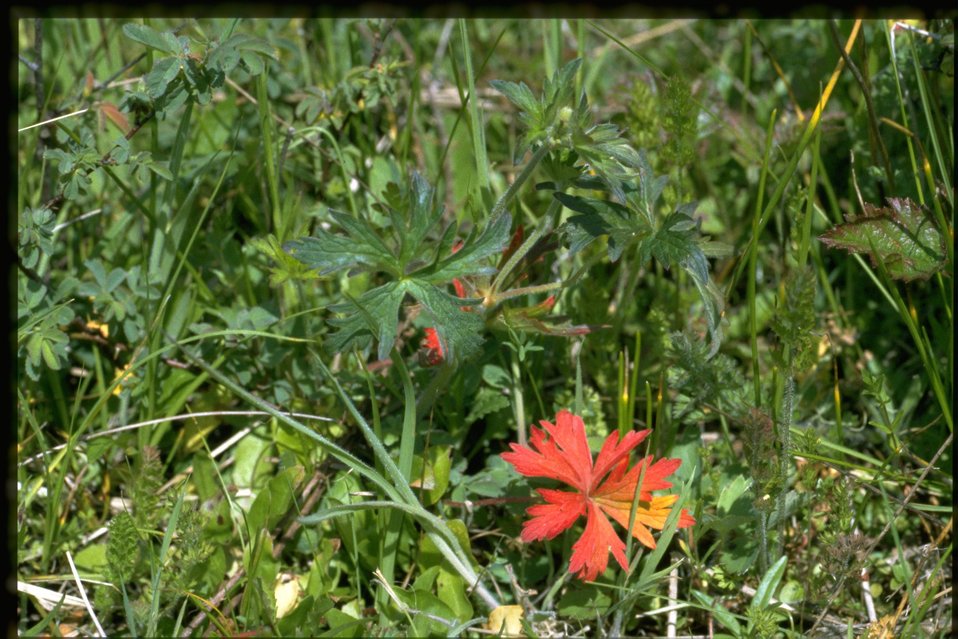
Farshot of Geranium leaf.